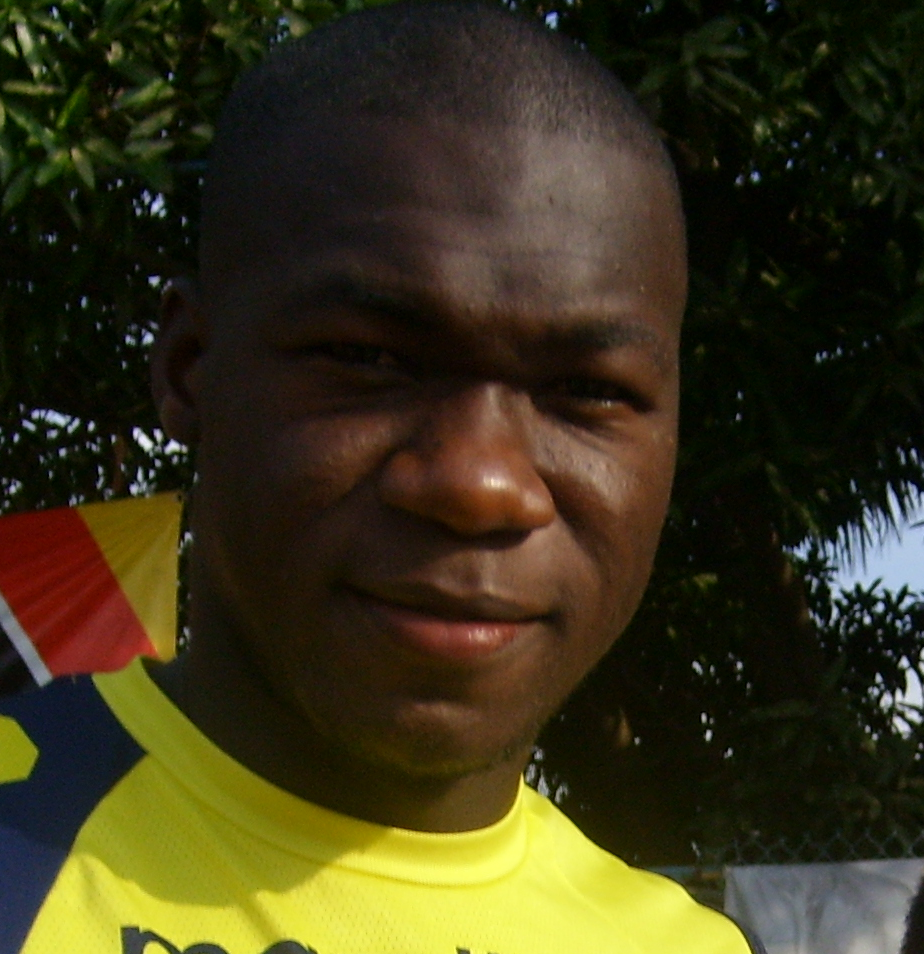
Picture of Felipe Caicedo